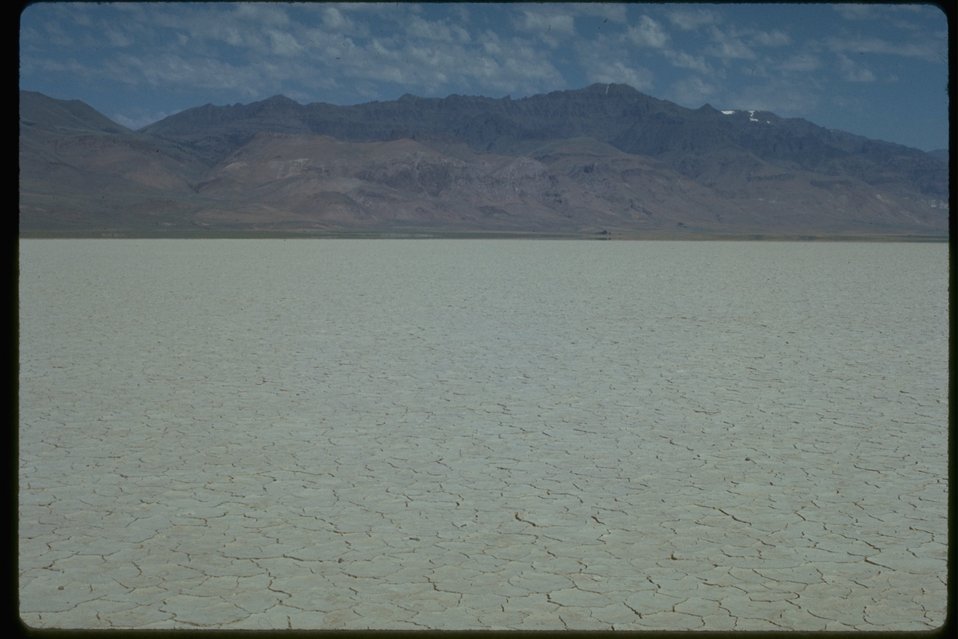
Alvord Desert in the foreground and Steens Mountain in the background. OR 2-74